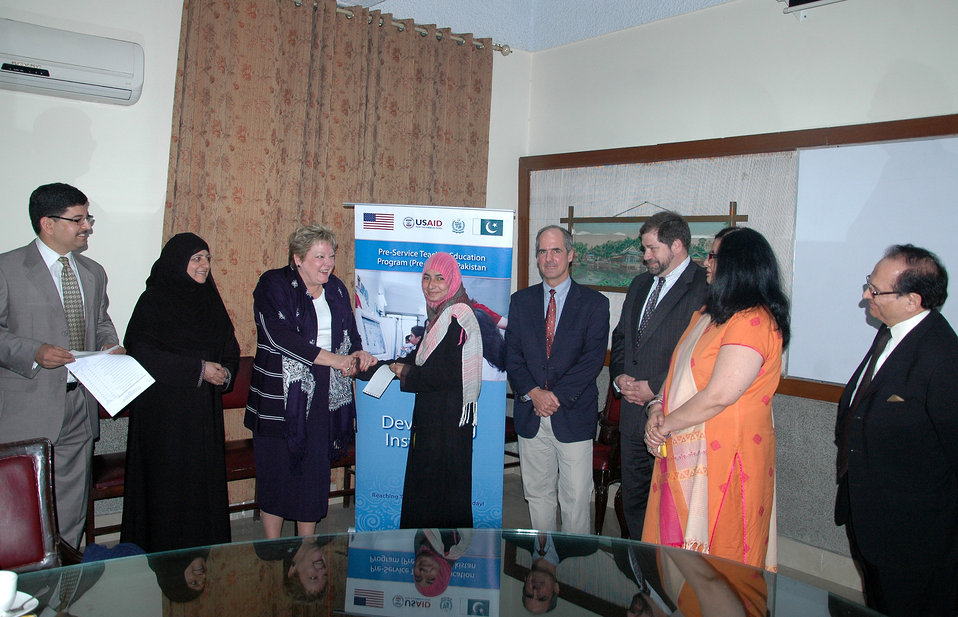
Pre-Service Teachers Education Program (Pre-STEP)

Lahore, February 21, 2012 - Deputy Mission Director USAID Ms. Karen Freeman distributing scholarships to B. Ed (Hons.) students at IER, University of the Punjab.